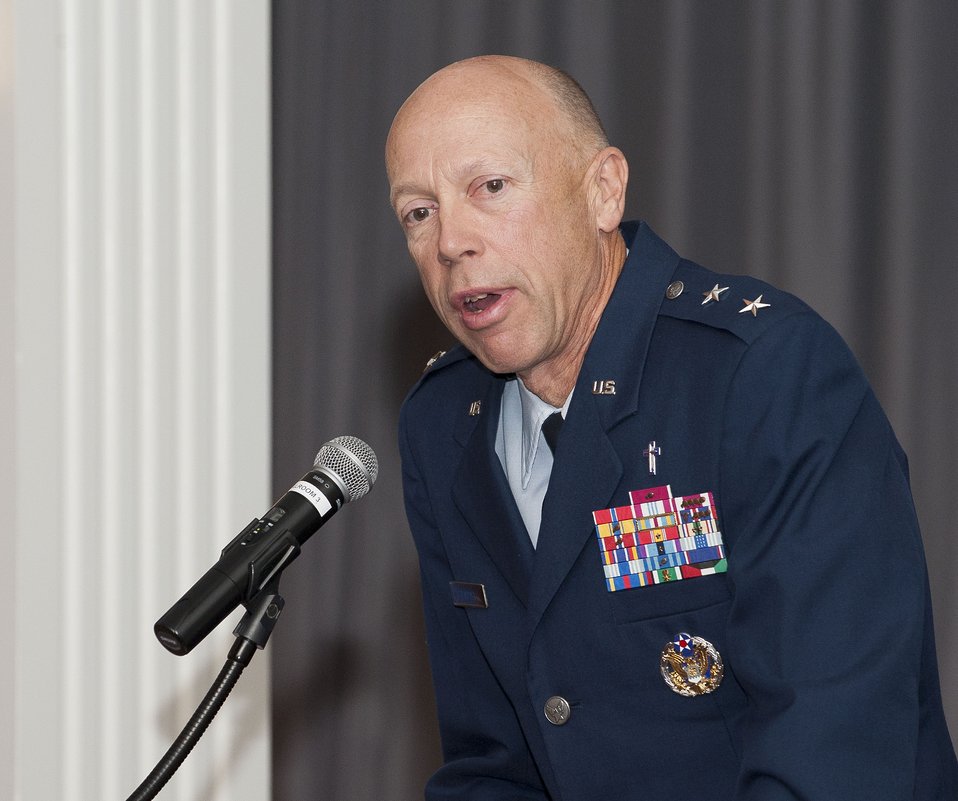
chaplain promo

Chief of Chaplains Maj. Gen. Howard Stendahl gives some remarks
during his promotion ceremony at Joint Base Anacostia-Bolling, Aug. 31,
2012.